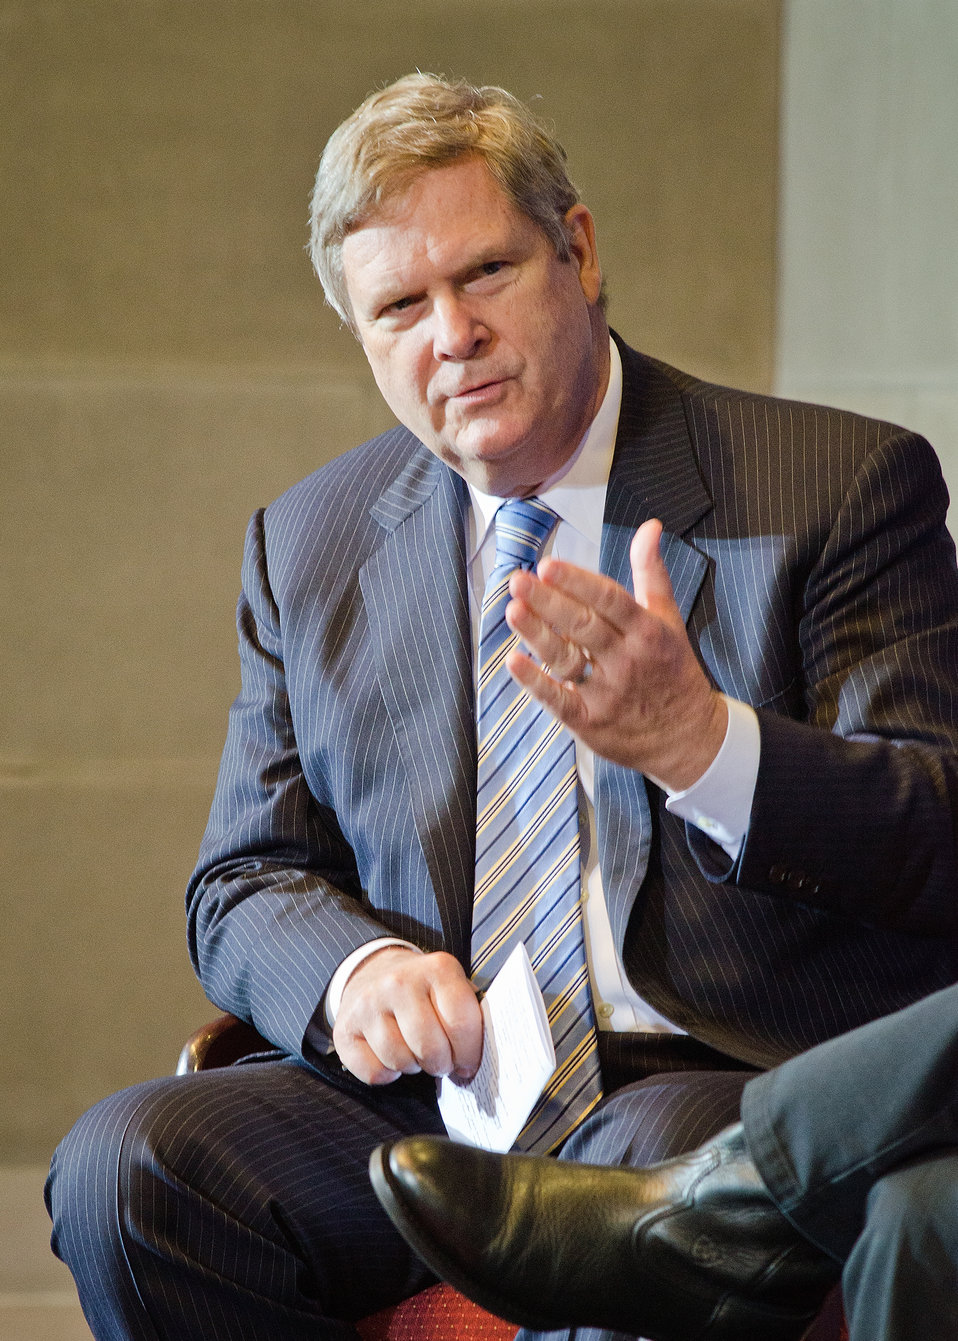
Agriculture Secretary Tom Vilsack was the moderator on the panel “Conserving Rural Lands: New Models for Working Lands and Wildlife” at the White House Conservation Conference, “Growing America’s Outdoor Heritage and Economy” at Interior Department, Yates Auditorium in Washington, D.C. on Friday, March 2, 2012 The conference waspart of President Barrack Obama’s, “America’s Great Outdoors Initiative” to spotlight community-driven conservation efforts and discussed how to build their success.